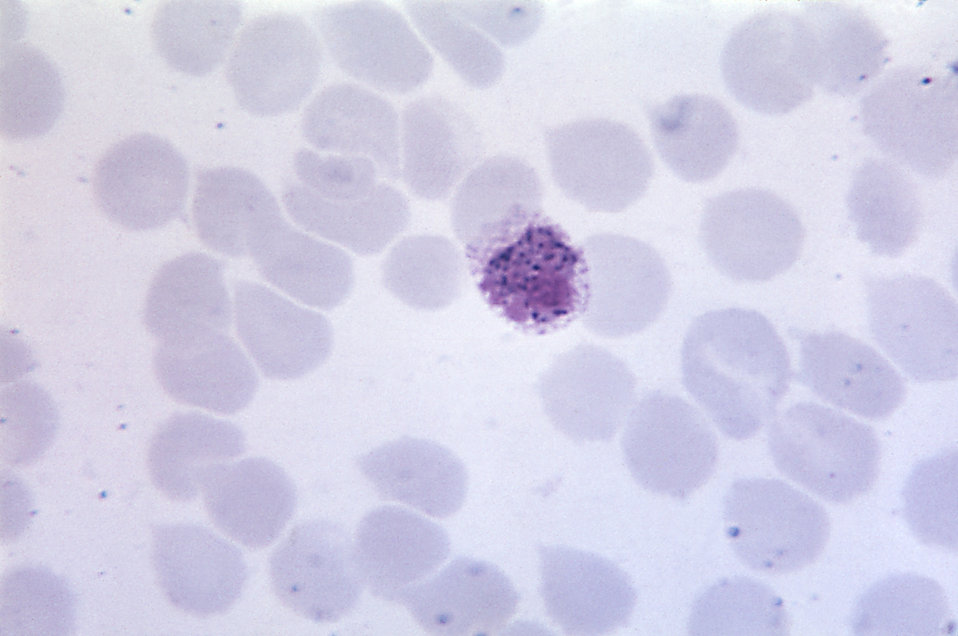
This thick film micrograph depicts a Plasmodium vivax microgametocyte, Magnified 1125x.